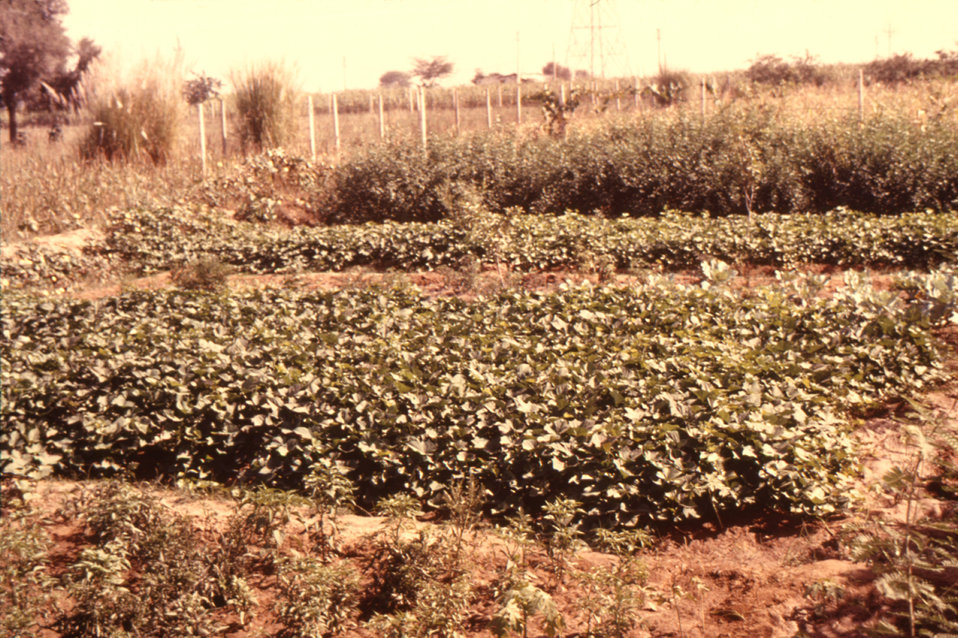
This image of an irrigated farm was taken during trip by CDC personnel to Northern India to study rhesus monkeys.